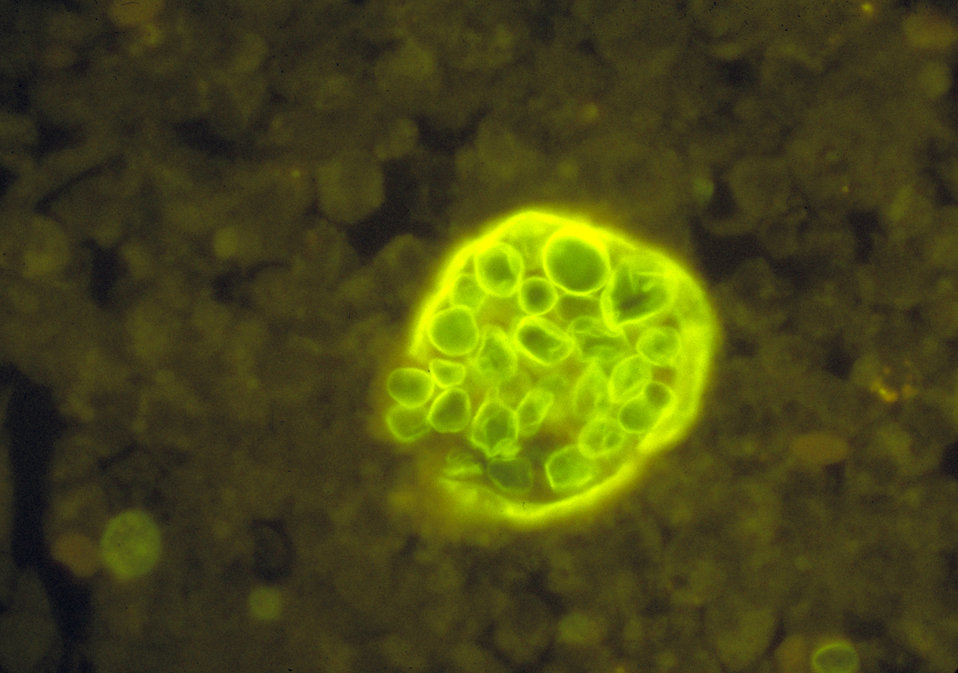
Histopathology of coccidioidomycosis. Spherule of Coccidioides immitis with endospores. Calcofluor stain.